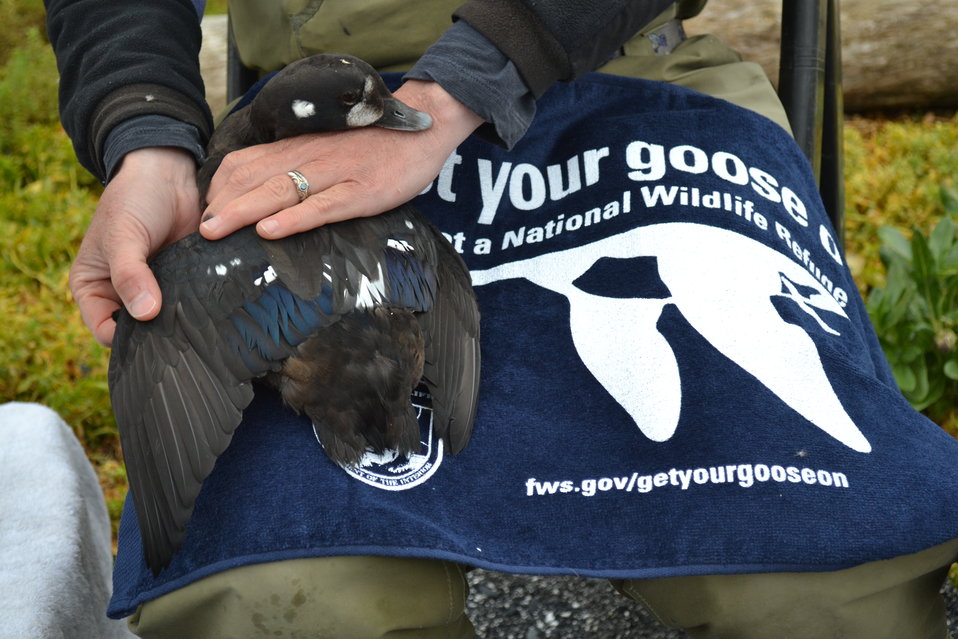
Get Your Goose On! - Alaska Style

USFWS Harlequin Duck Survey of Kodiak Island.

Credit: Katharine Studholme / USFWS

The Kodiak National Wildlife Refuge is a United States National Wildlife Refuge in the Kodiak Archipelago in southwestern Alaska, United States.

The Kodiak National Wildlife Refuge includes the southwestern two-thirds of Kodiak Island, Uganik Island, the Red Peaks area of Afognak Island and all of Ban Island in the archipelago. It encompasses 1,990,418 acres (8,054.94 km2).[2] The refuge is administered from offices in Kodiak.

The refuge contains seven major rivers and about 100 streams. It is a spawning ground for all six species of Pacific Ocean salmon, trout and several other fish species, as well as a nesting ground for 250 species of bird, many of which feed on salmon. The refuge has only six native species of mammals: Kodiak brown bear, red fox, river otter, ermine, little brown bat and tundra vole. The non-native mammals Sitka deer, mountain goat, Roosevelt elk, snowshoe hare and beaver were introduced to the archipelago between the 1920s and 1950s and are now hunted and trapped.

The climate of the refuge is that of southern Alaska, mild and rainy. Many areas in the refuge are densely forested with Sitka Spruce at lower elevations. There are grasslands in drier areas and at higher elevations. The refuge contains several small glaciers.